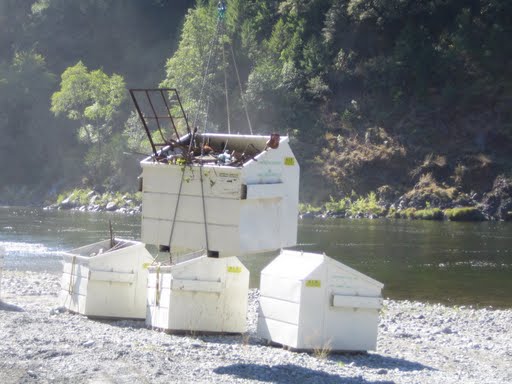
Bins to collect illegal dump waste for the helicopter to airlift-out

Dumpsters full of illegally dumped trash are carried out by a Sikorsky S-61 helicopter. The trash threatened salmon habitat and would have been carried into the Klamath River during major floods.